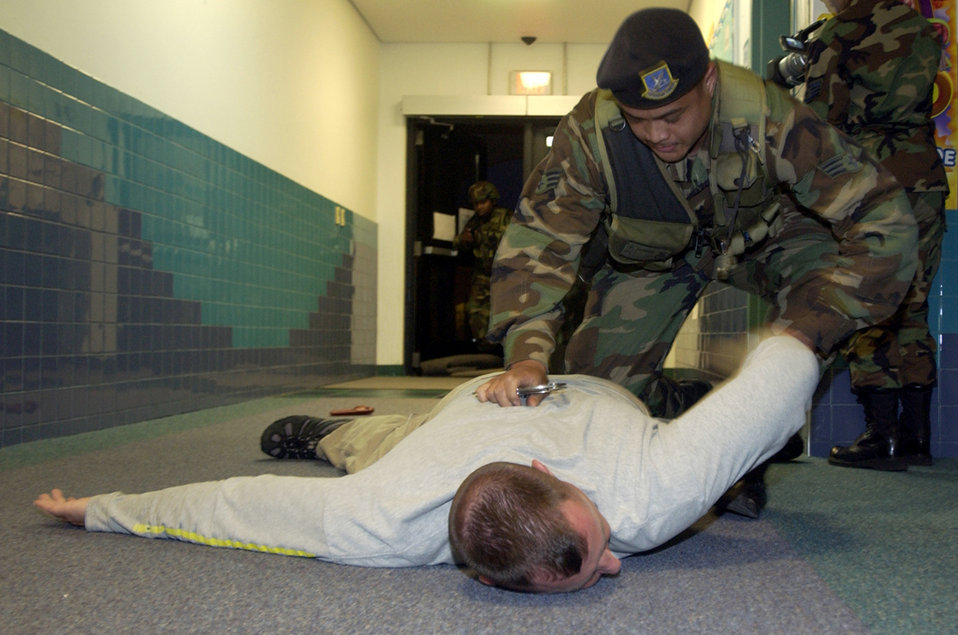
Hostage negotiation exercise

During a hostage negotiation exercise, Senior Airman Peter Ferrer detains a hostage taker after a three-hour stand-down with the 36th Security Forces Squadron Wednesday, Feb. 22, 2006, at Anderson Air Force Base, Guam.